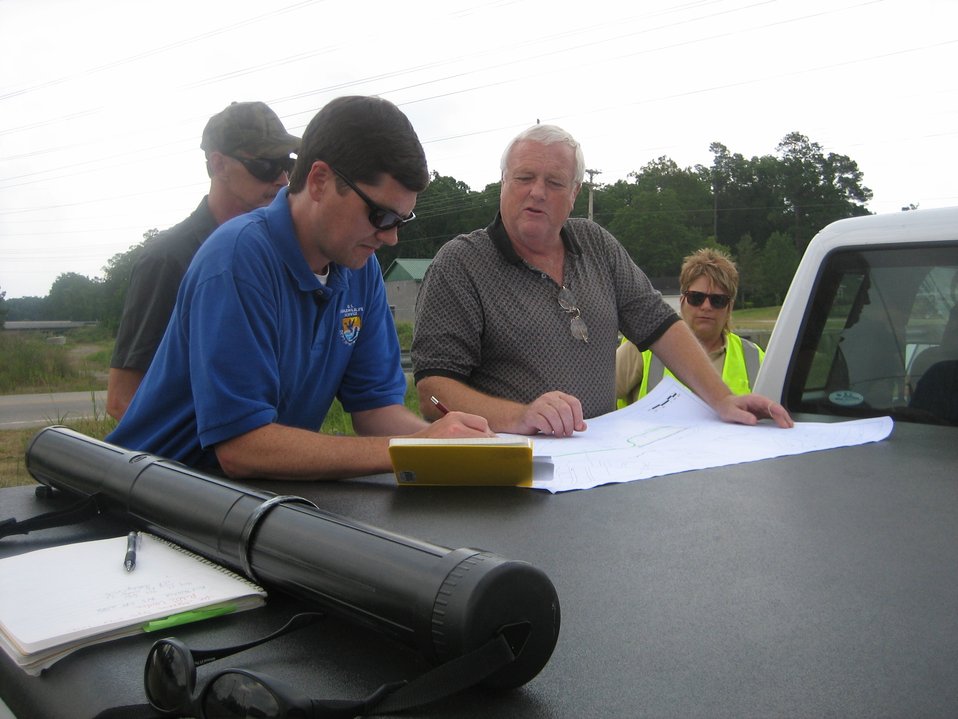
Project Planning

Craig Aubrey of the South Carolina Coastal Program Office with partners